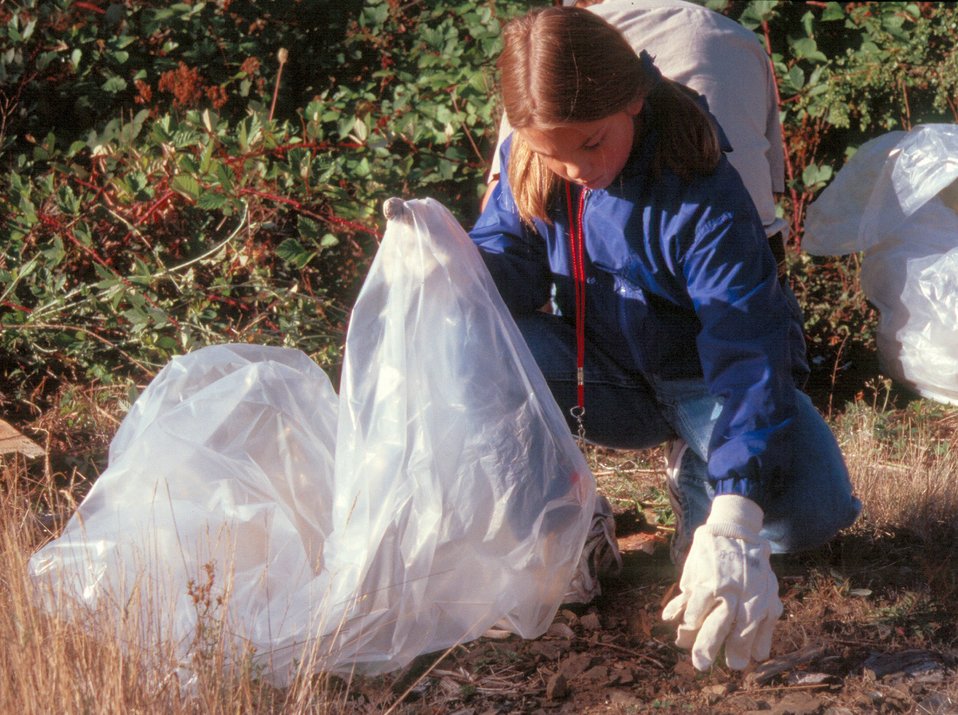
Volunteer Melanie Robertson helps clean up BLM lands